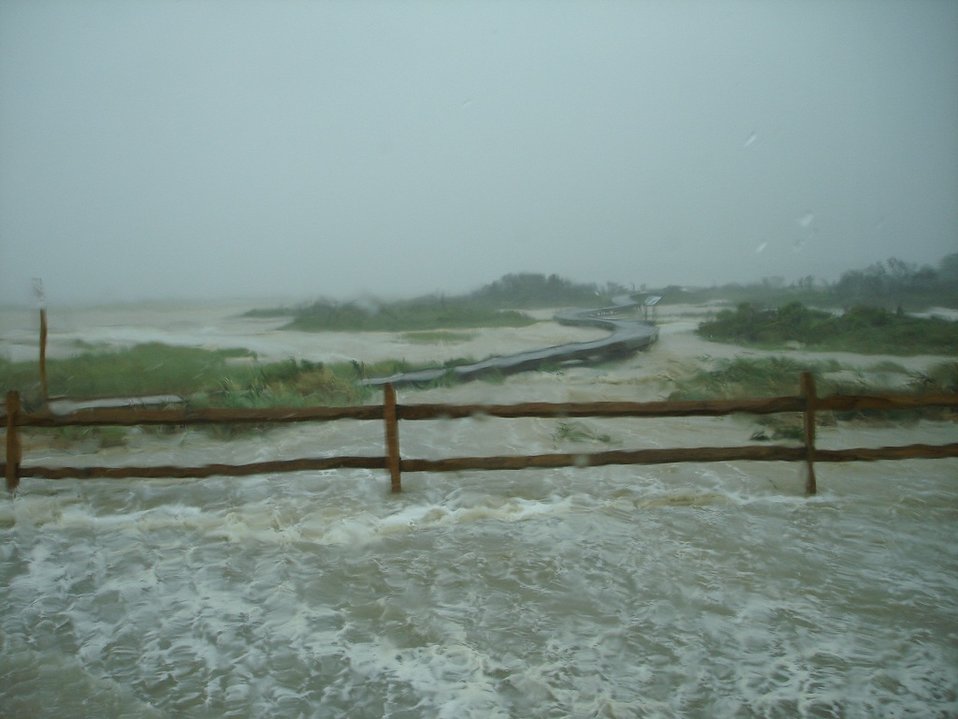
Flooded boardwalk near Toms Cove Visitor Center at Chincoteague National Wildlife Refuge in Virginia. The flooding was caused by Hurricane Irene.